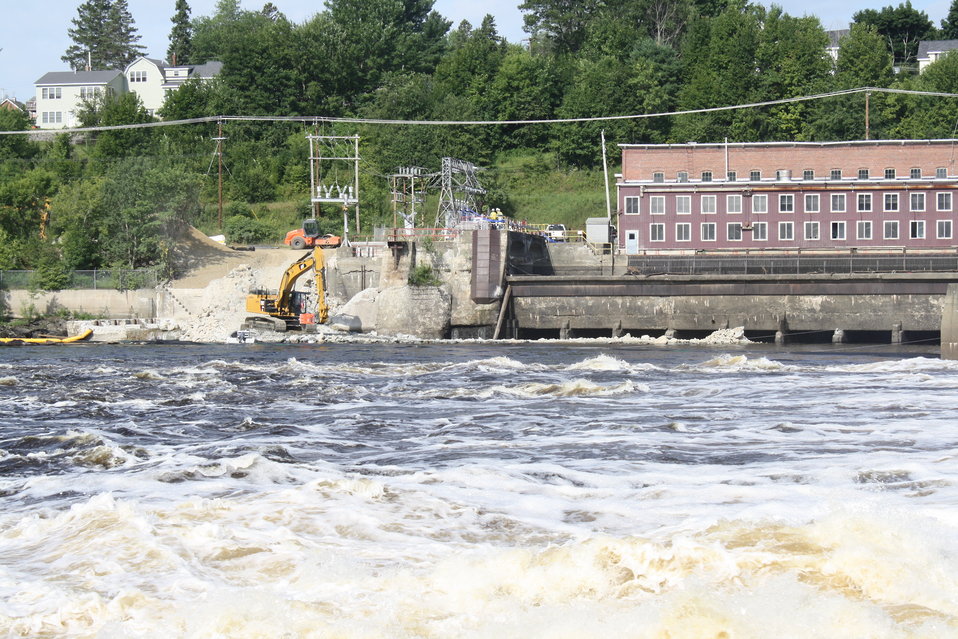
Veazie Dam Removal

A local contractor (Sargent Corporation, Old Town) prepares to breach the Veazie Dam, re-opening the Penobscot River from Old Town, Maine to the sea for the first time in nearly 200 years. The week of July 15, another local contractor (R.F. Jordan & Sons Construction, Inc., Ellsworth) completed advance demolition work on the facility’s smaller “Plant-B” powerhouse to prepare for the removal of the main dam.